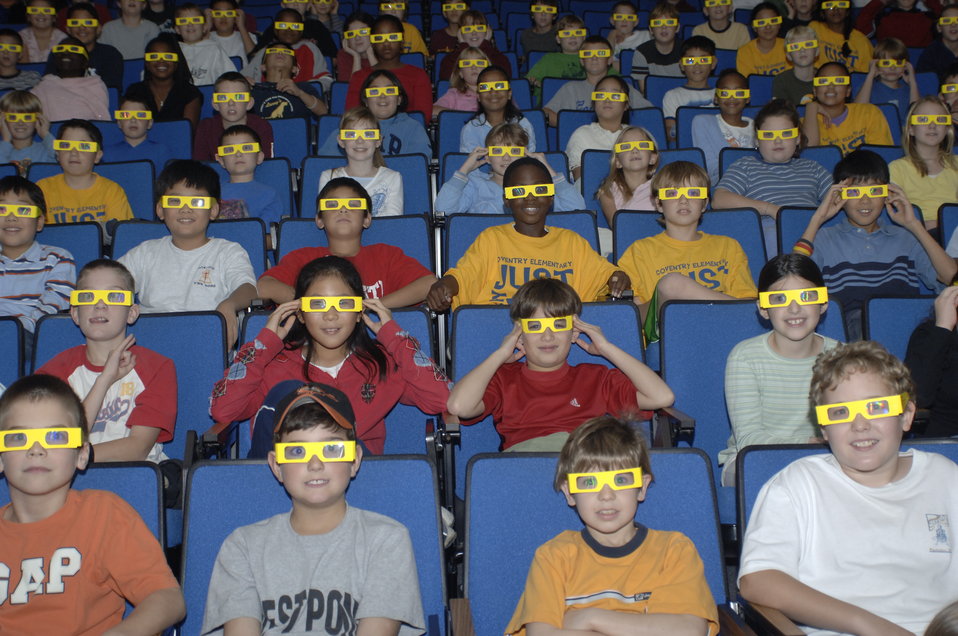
Students participate in the Physics Fest at Thomas Jefferson National Accelerator Facility.